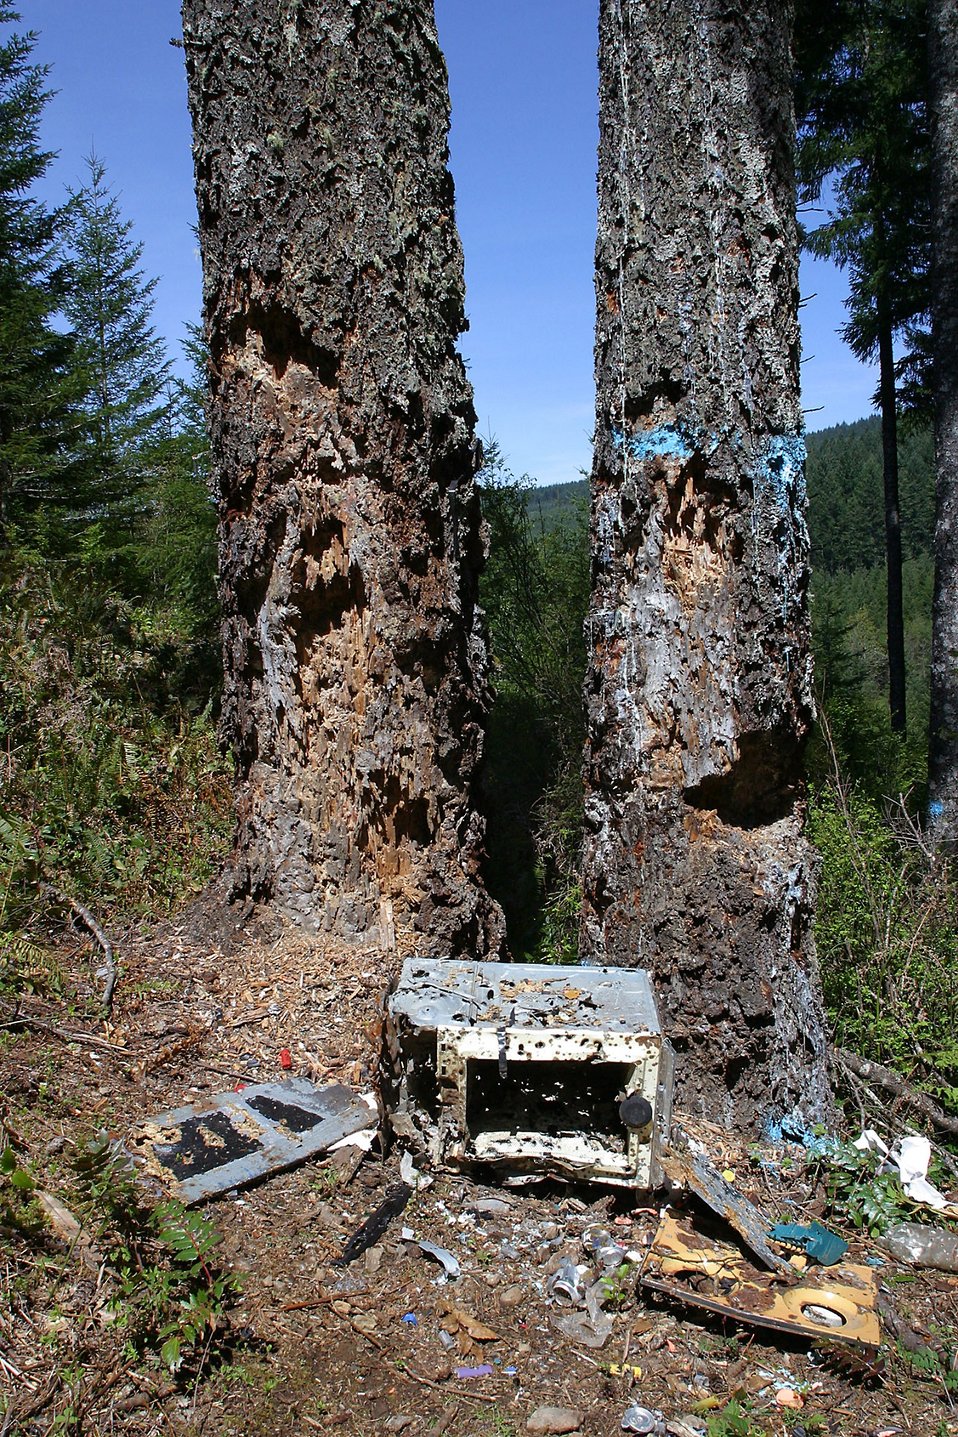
Illegal dumping ground in Santiam watershed used as a shooting range.